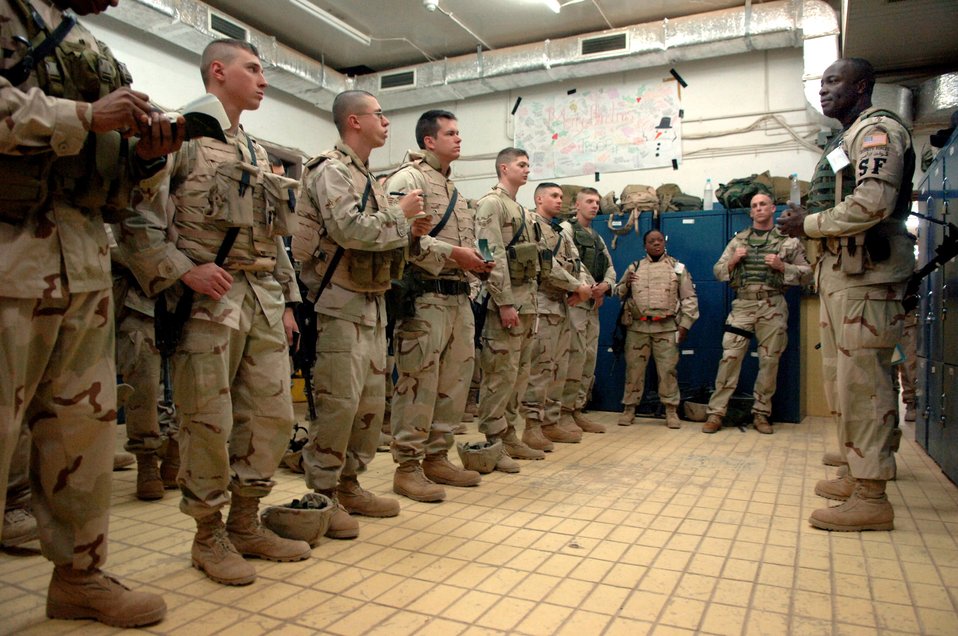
Security forces Airmen protect Iraq's combat airpower hub

Master Sgt. Darrell Shelton gives a daily situational awareness briefing during security forces guardmount Feb. 15 at Balad Air Base, Iraq. Sergeant Shelton is assigned to the 332nd Expeditionary Security Forces Squadron.